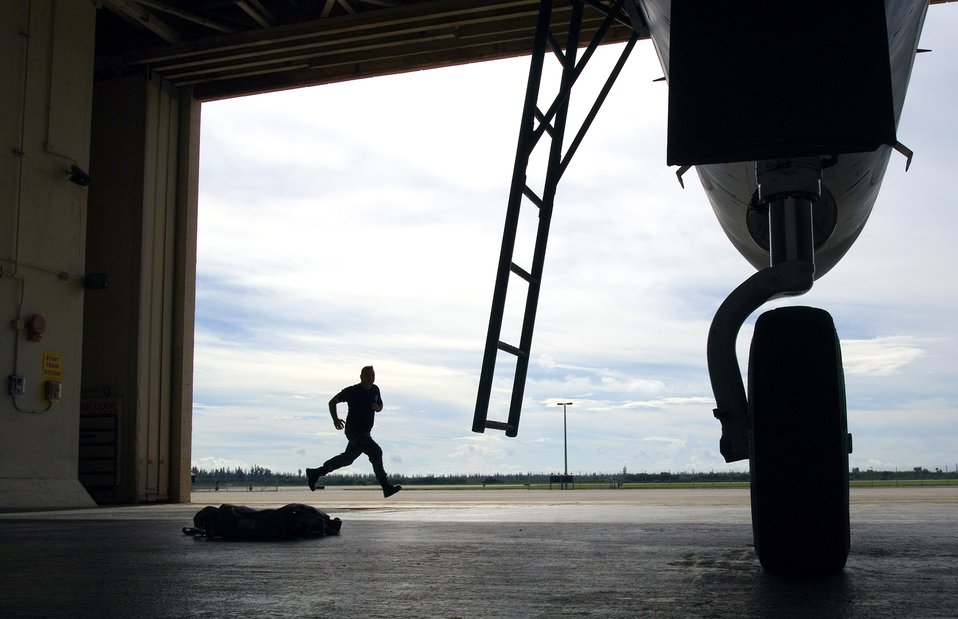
Guard unit helps protect nation

Crew chief Staff Sgt. Thomas Fitzgerald sprints to his F-15 Eagle after an alert alarm announces the immediate launch of aircraft during a training exercise for Operation Noble Eagle Oct. 3 at the 125th Fighter Wing, Det. 1, Homestead Air Reserve Base, Fla. The detachment provides the Continental NORAD Region commander rapid response to invasion of the sovereign airspace of the U.S., and responds with appropriate defense measures against all hostile actions directed at the people and property of the U.S. during Operation Noble Eagle.